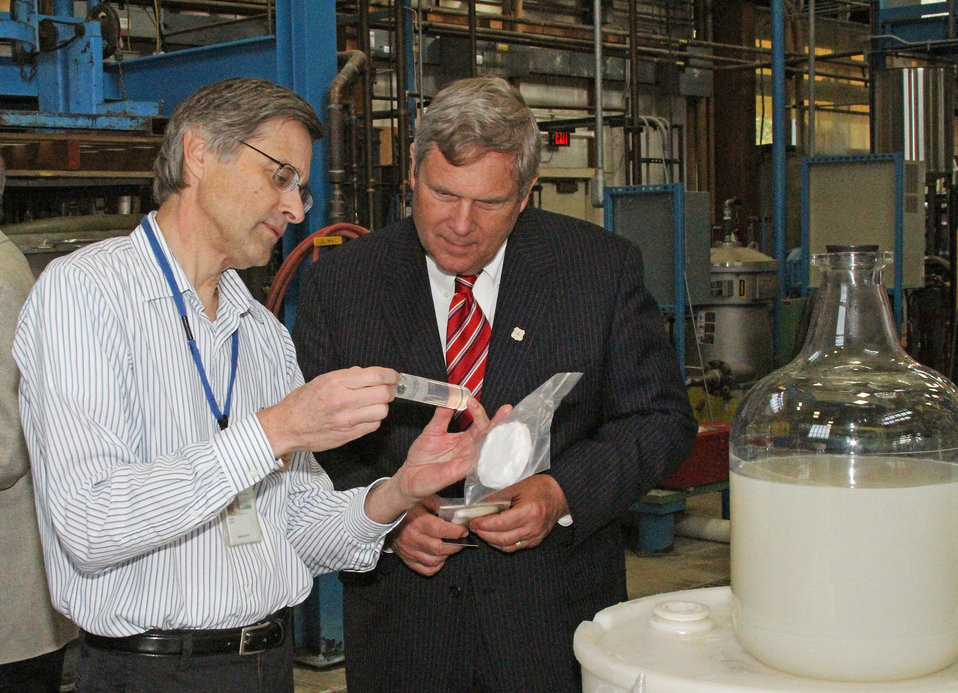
Alan Rudie Sec Vilsack

Alan Rudie demonstrates an item to Agriculture Secretary Tom Vilsack at the U.S. Forest Service Products Laboratory in Madison, WI on Oct. 1, 2012.